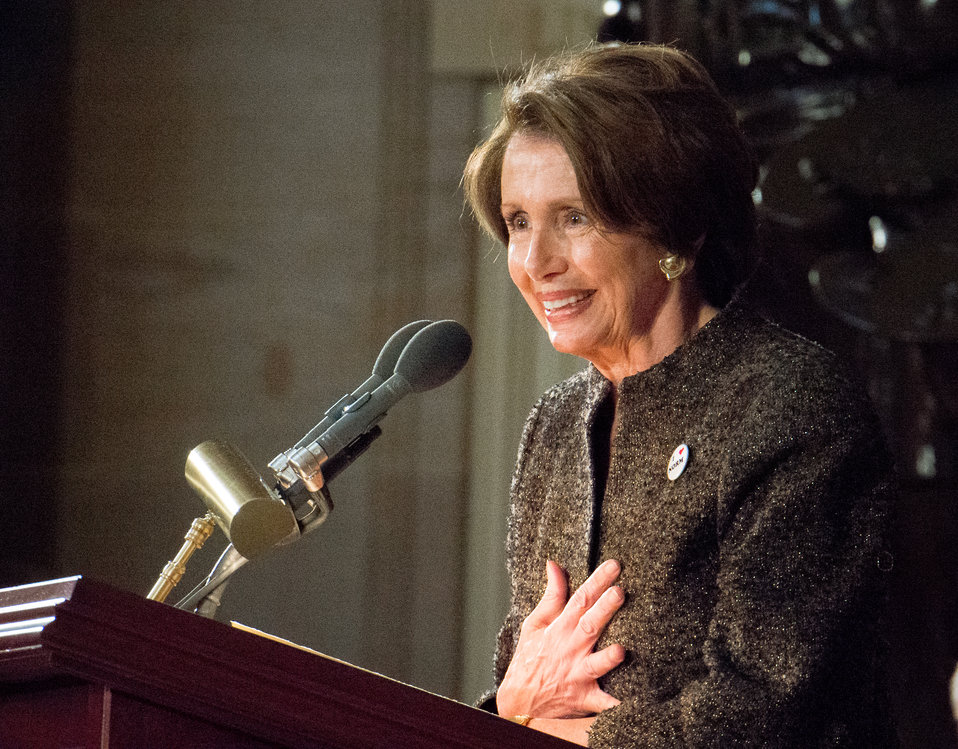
Minority Leader of the House of Representatives Nancy Pelosi speaks at the dedication of the Dr. Norman Borlaug statue in the National Statuary Hall at the U. S. Capitol in Washington, D.C. on Tuesday, Mar. 25, 2014. Today commemorates 100 years since Dr. Borlaug’s birth. Through his scientific and humanitarian achievements, Nobel Laureate Dr. Norman E. Borlaug (1914-2009) has been credited with saving millions of people from starvation in developing countries. His collaborative work with scientists in Mexico on a high-yielding, disease resistant dwarf wheat sparked the Green Revolution of the 1960s. Other speakers include U.S. Department of Agriculture The National Statuary Hall Collection in the U.S. Capitol is composed of statues donated by individual states to honor persons notable in their history.